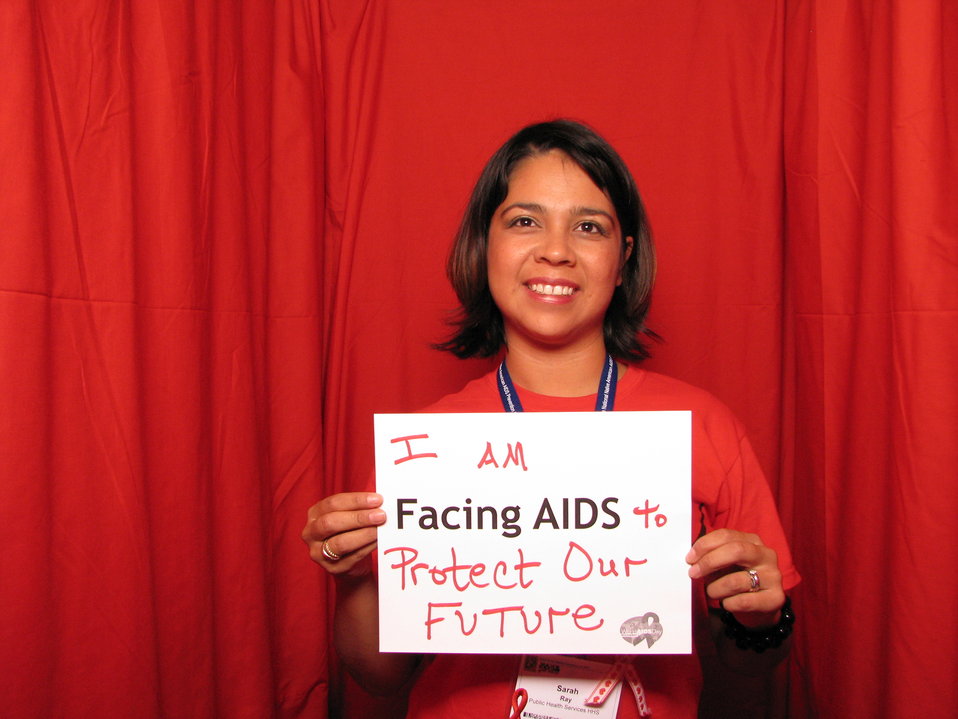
I AM FACING AIDS to Protect Our FUTURE.

From the AIDS.gov photo booth at the U.S. Conference on AIDS, September 2010 (Orlando, FL).